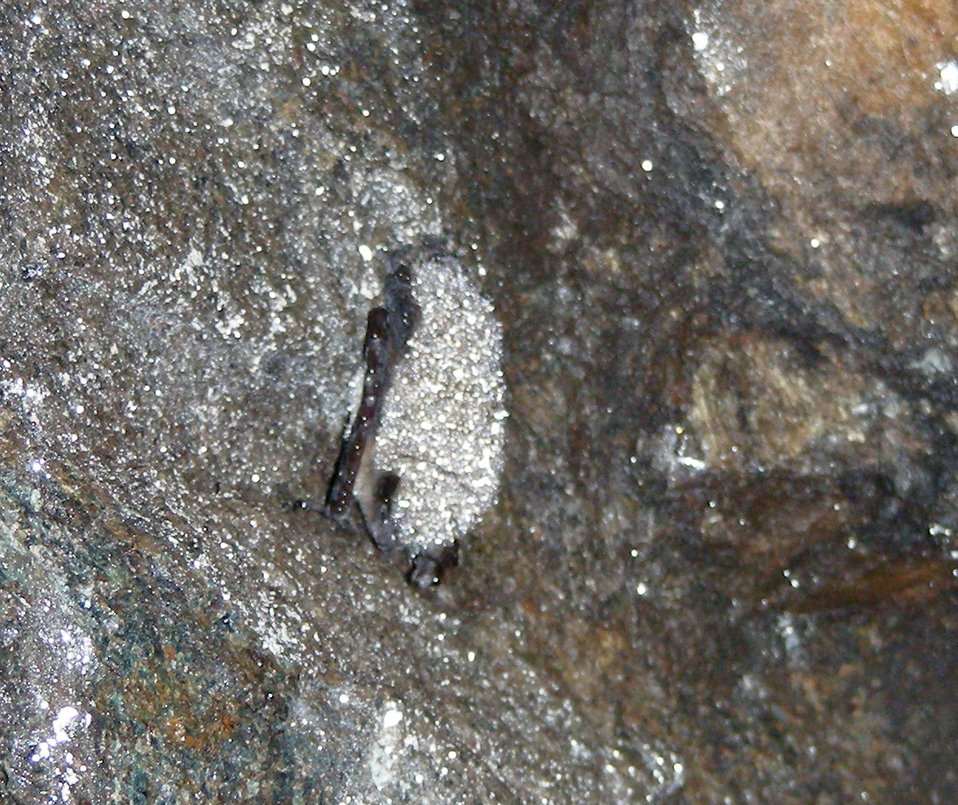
Bat affected by White-nose Syndrome

Little brown bat with white-nose syndrome in Greeley Mine, Vermont, March 26, 2009